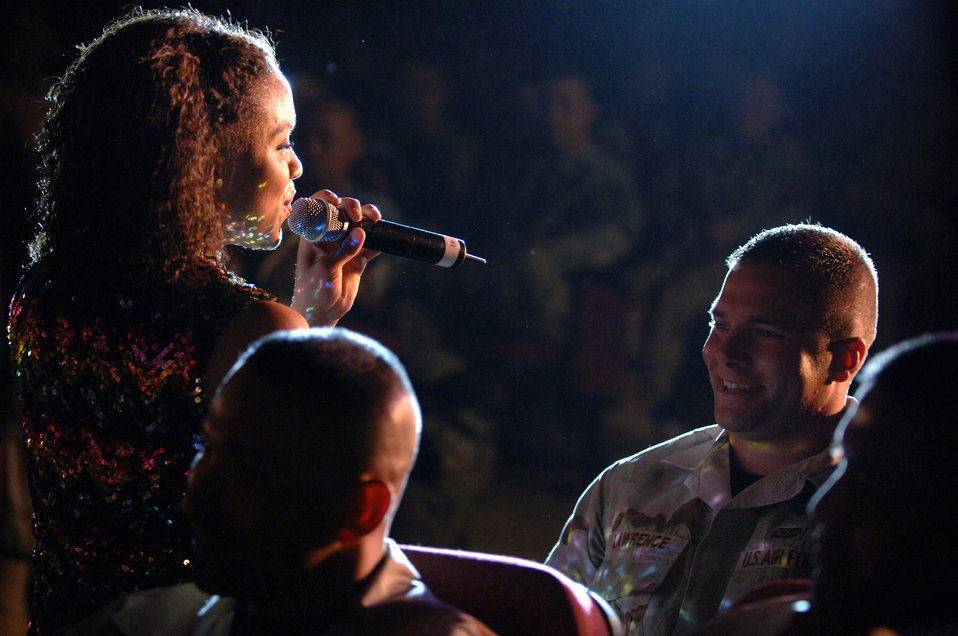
Tops In Blue put on a show for Airmen, Soldiers at Balad

A Tops In Blue member sings to Senior Airman Todd Lawrence during their performance April 28 at Balad Air Base, Iraq. Thirty eight active-duty Airmen make up the singers, dancers, instrumentalists, drivers and stage crew for the Air Force's premier expeditionary entertainers, who set out in mid-April to kick off their 2007 tour singing and dancing their way through the area of responsibility. Airman Lawrence is a firefighter with the 332nd Expeditionary Civil Engineer Squadron and is deployed from Malmstrom Air Force Base, Mont.